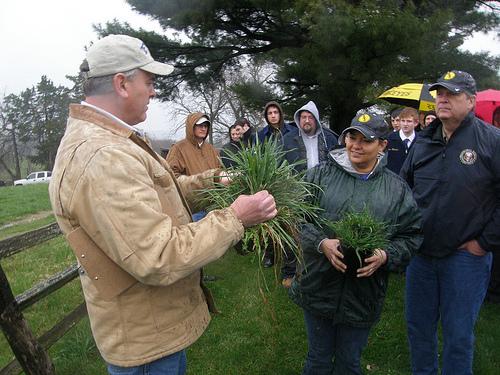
EPA, USDA hear about grazing techniques at Collins Farm, IA

Monty Collins (left) talks to Environmental Protection Agency Administrator Lisa P. Jackson and Agriculture Secretary Tom Vilsack about the environmental benefits of rotational grazing techniques used with his 30-head cow/calf operation near Pleasantville, IA.